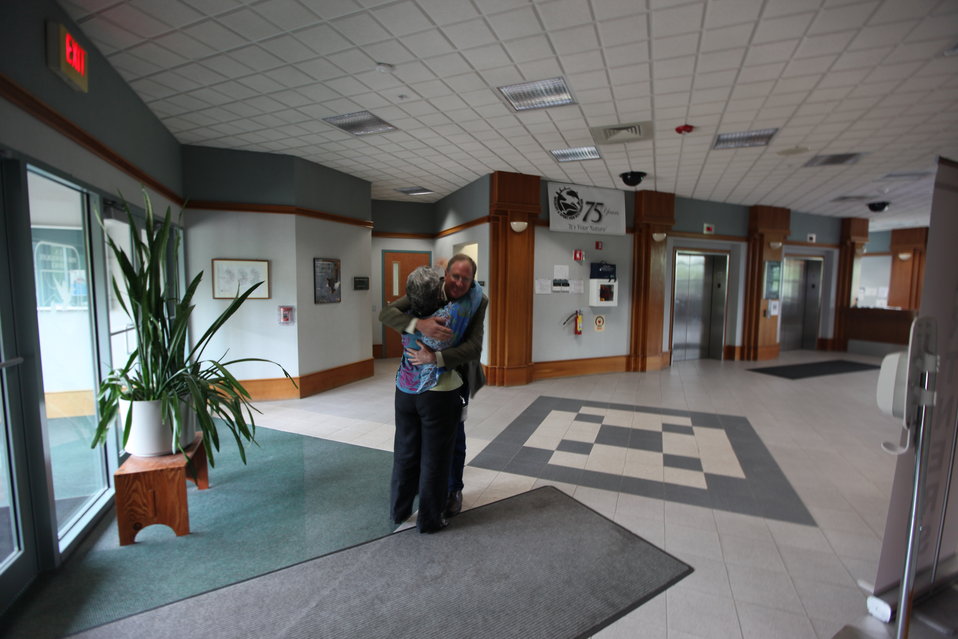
Northeast Region Employee Appreciation Awards